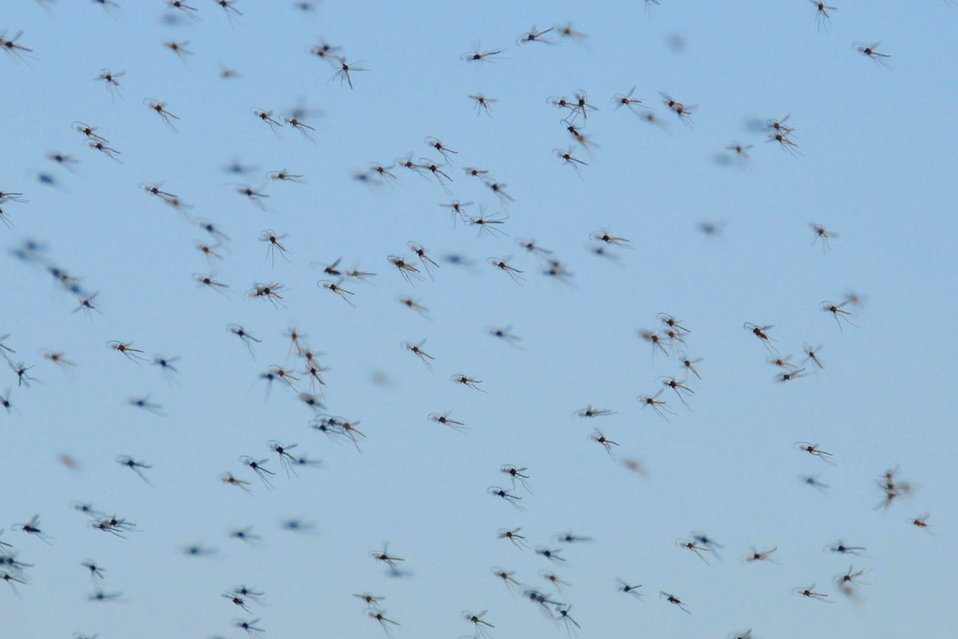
Swarm of midges Lacreek NWR

Midges or Choronomids, especially in their larval form, are an extremely important food source for waterfowl. The adult phase pictured here are very important for swallows, night-hawks, warblers, and other migratory birds.